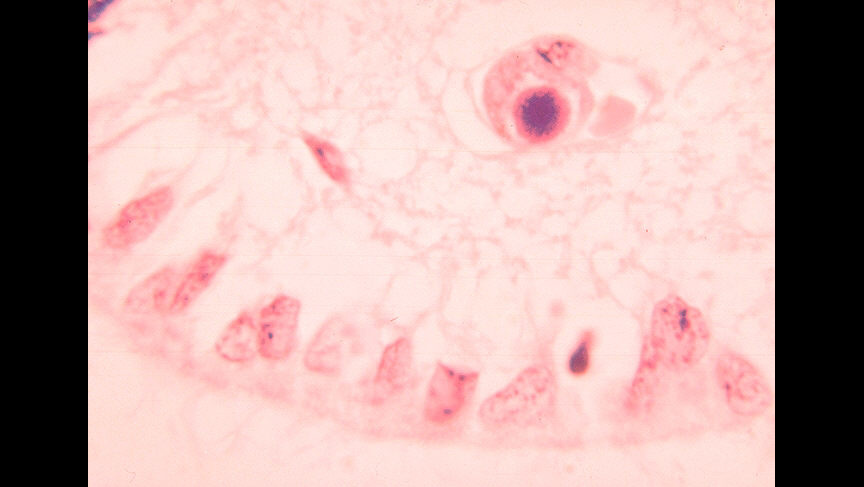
Histopathology of cytomegalovirus infection of brain capillary endothelial cell.